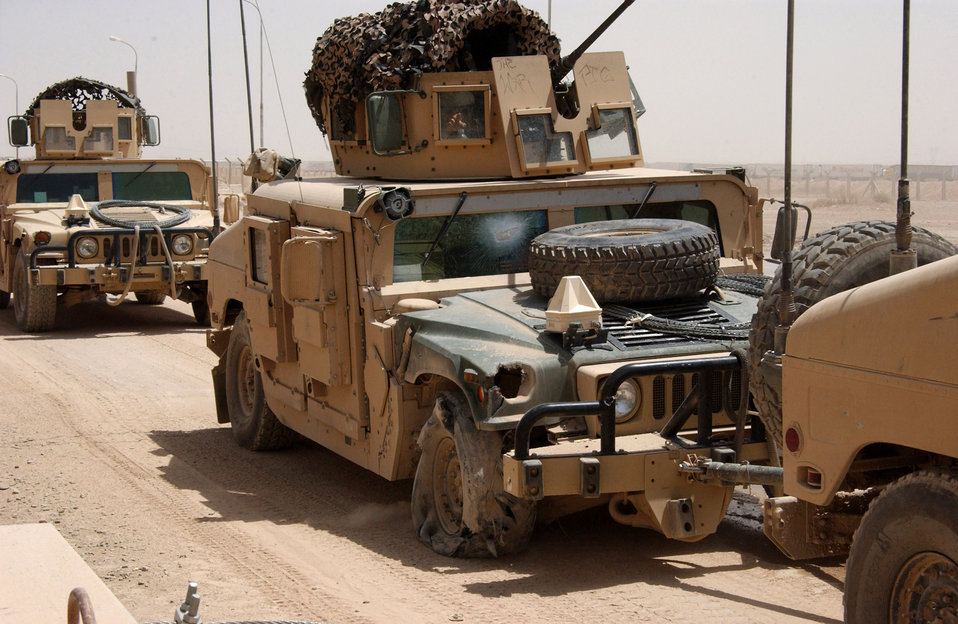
Security forces Airmen step outside the wire

A 732nd Expeditionary Security Forces Squadron Det. 1 police transition team returns to Contingency Operating Base Speicher towing one its Humvees after it struck an improvised explosive device July 29 in Iraq. No one was injured in the blast.